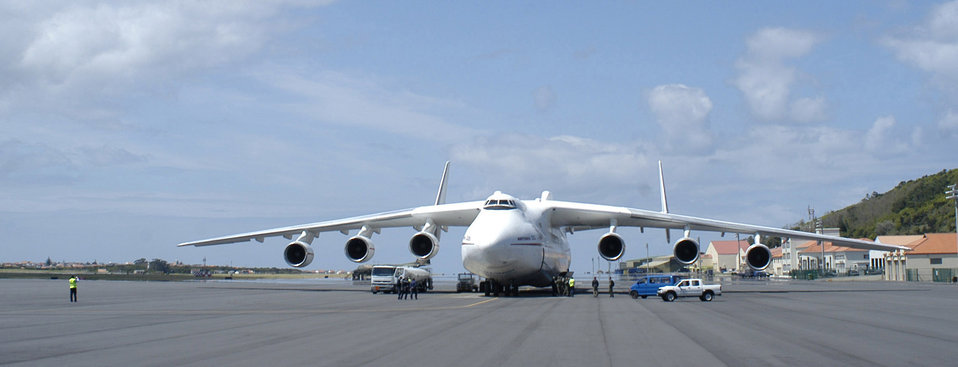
Dream retrievers

LAJES FIELD, Azores -- Portuguese and American workers tend to the Antonov An-225 Mriya, or